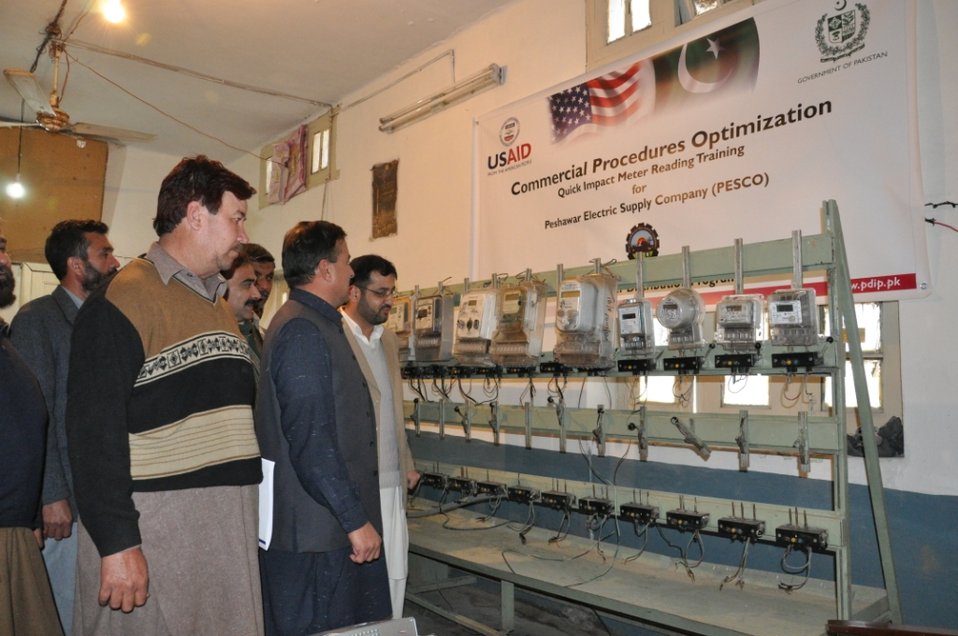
Meter Reading Training

Peshawar, February 27, 2012 - The USAID organized 'Quick Impact Meter Reading Training' at PESCO.